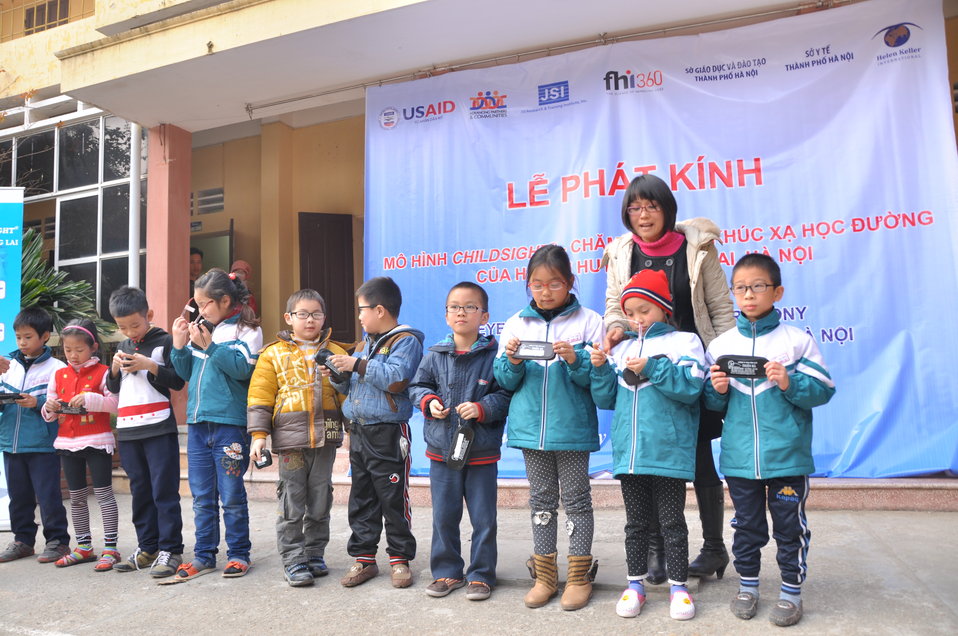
USAID supports distribution of eyeglasses to pupils and teachers in Quoc Oai, Hanoi.

Kieu Phu Junior Secondary School, Quoc Hoai, Hanoi, December 23, 2013.